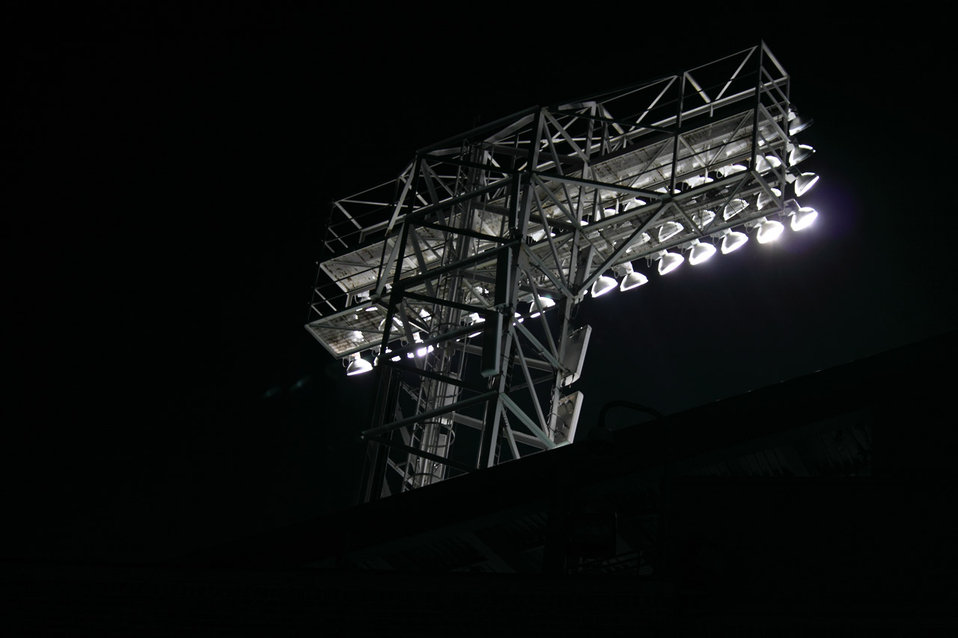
Fenway lights

Lights at fenway park in boston, ma.